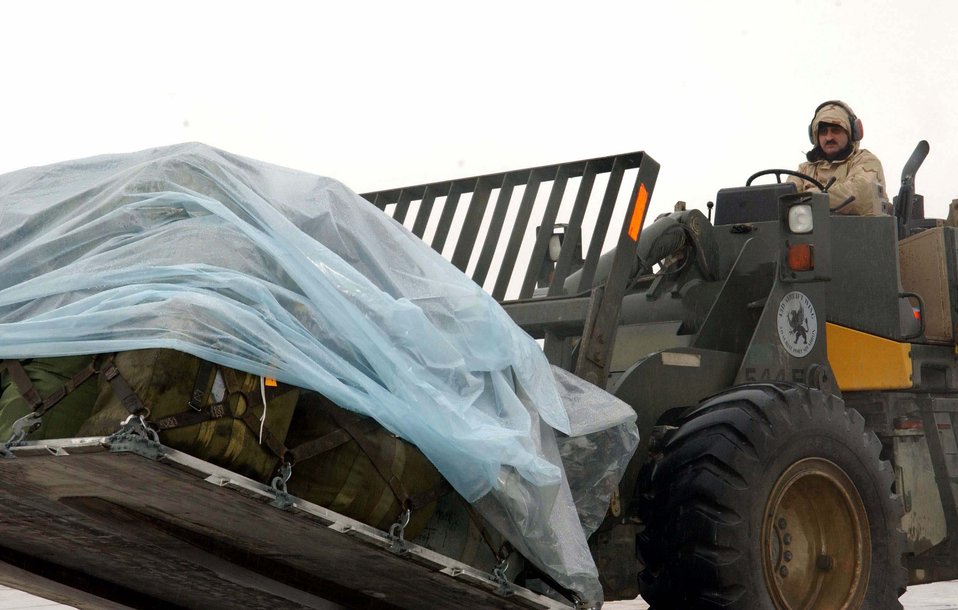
Expeditionary logistics team carries the load

BAGRAM AIR BASE, Afghanistan -- Staff Sgt. Robert Willis uses a forklift to move cargo onto a C-17 Globemaster III. Sergeant Hutchinson is an air transportation specialist with the 455th Expeditionary Logistics Readiness Squadron here, deployed from Dobbins Air Reserve Base, Ga.